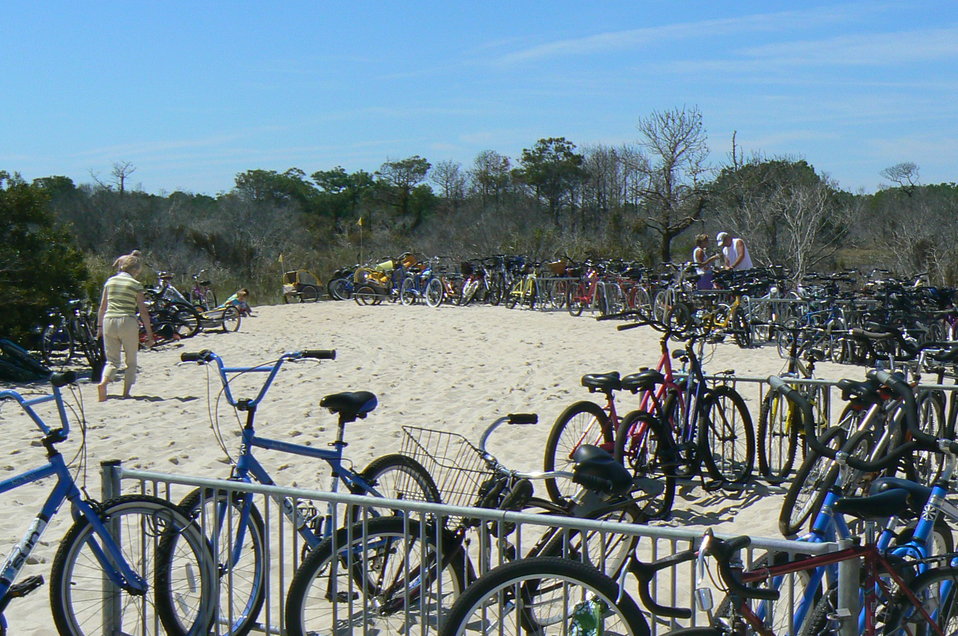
Bikes at Chincoteague National Wildlife Refuge

The new bike racks at the Refuge helped members of the public reach the beach after Irene buried the parking lot in sand.

Michael Dixon/USFWS